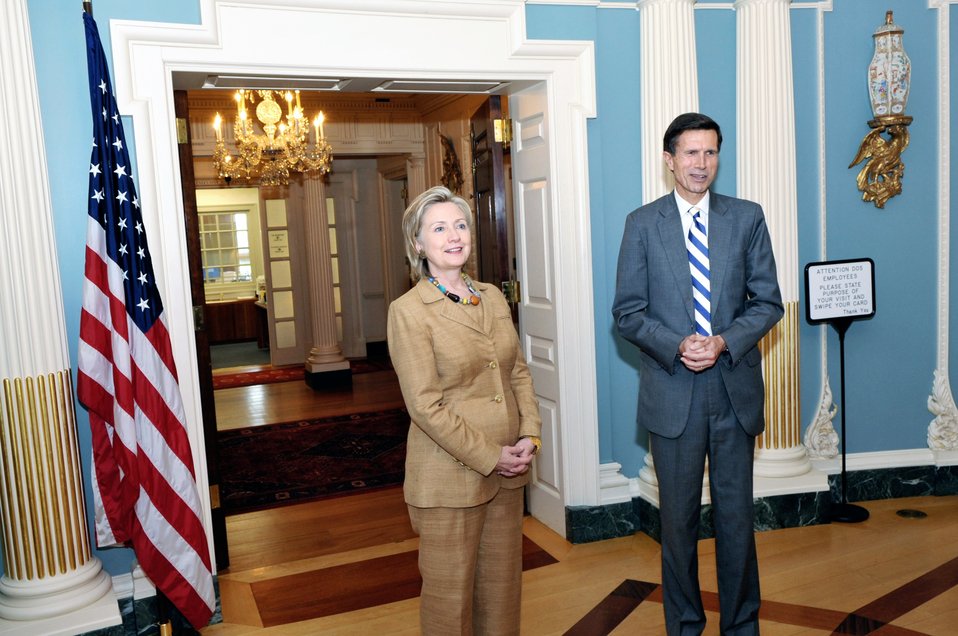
Secretary Clinton Shows Her Gratitude to Assistant Secretary Blake

U.S. Secretary of State Hillary Rodham Clinton shows her gratitude to Assistant Secretary of State for South and Central Asian Affairs Robert O. Blake for his involvement with the U.S.-India Strategic Dialogue at the U.S. Department of State in Washington, D.C., on June 11, 2010.